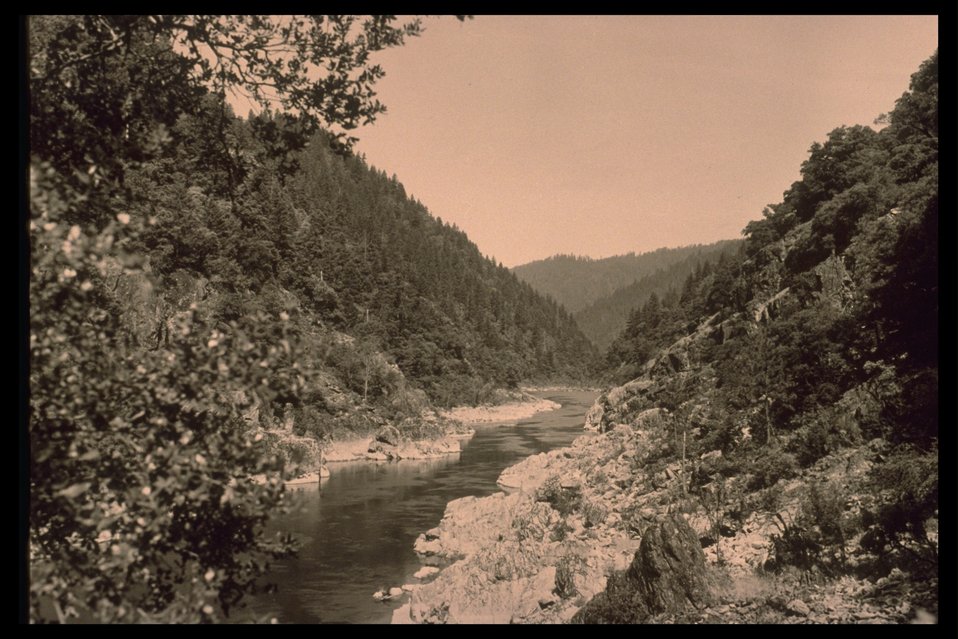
Black & White photo of what looks like the Rogue River.